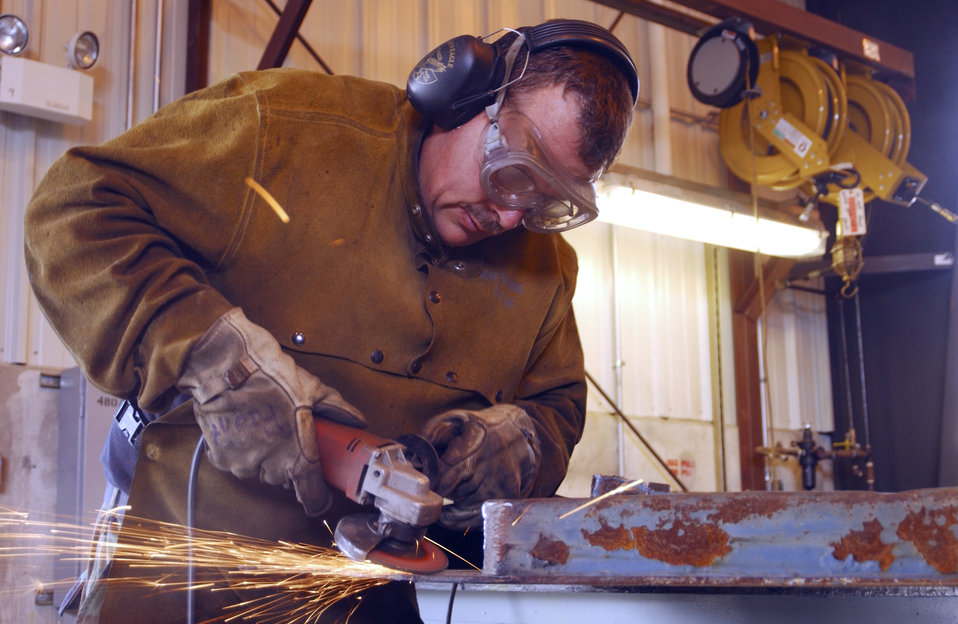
Grindin' down

PEASE AIR NATIONAL GUARD BASE, N.H. -- Tech. Sgt. David LaPlante repairs a pivot point on a dump truck tailgate here June 22. He is a mobile heavy equipment mechanic assigned to the 157th Logistics Squadron.